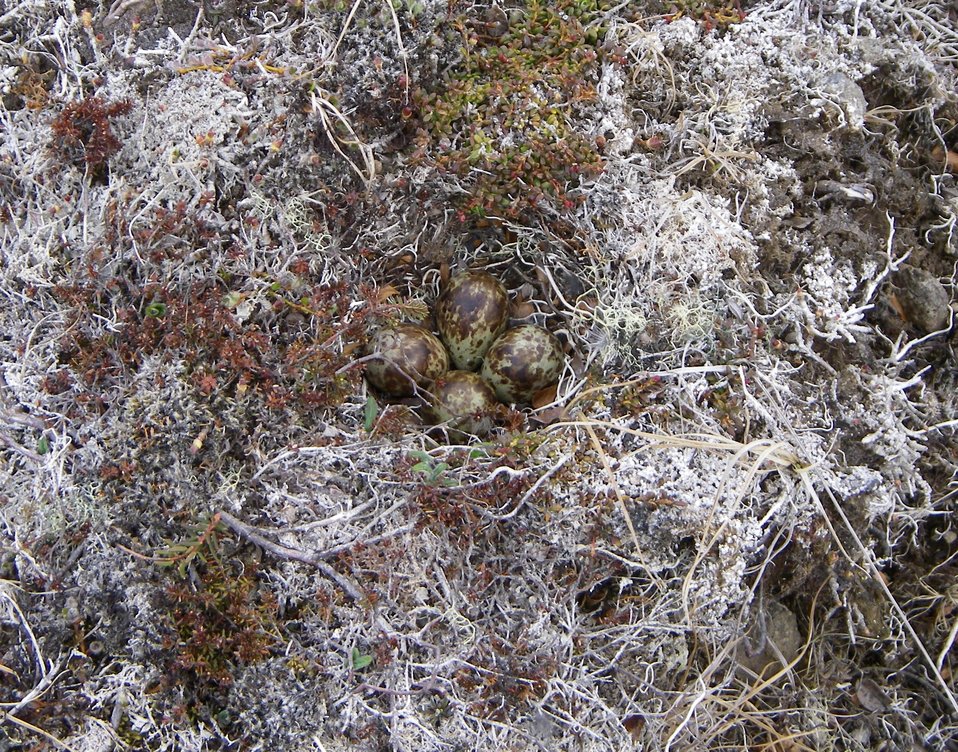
Rock Sandpiper nest

Wilderness north of Kinzarof Lagoon, Izembek National Wildlife Refuge
Photo by Kristine Sowl,
USFWS, Public Domain